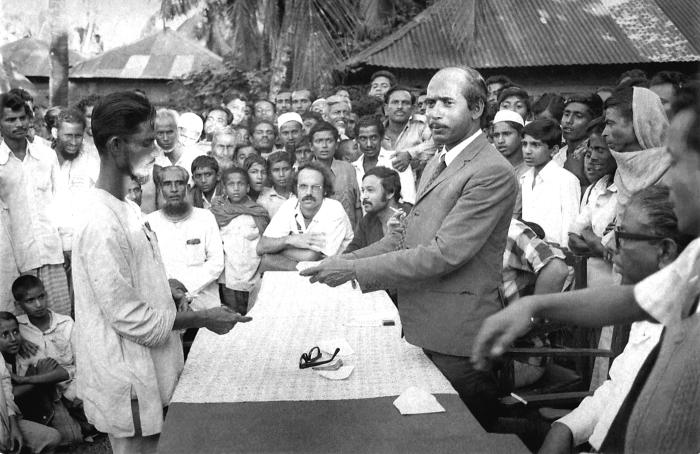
This 1975 image depicted a Bangladesh man as he was receiving his 250 Taka reward money for having reported what turned out to be a confirmed smallpox case in his community. Early on during the eradication campaign, the reward was 50 Taka, but as the campaign turned up fewer, and fewer cases, the reward grew to 250 Taka.